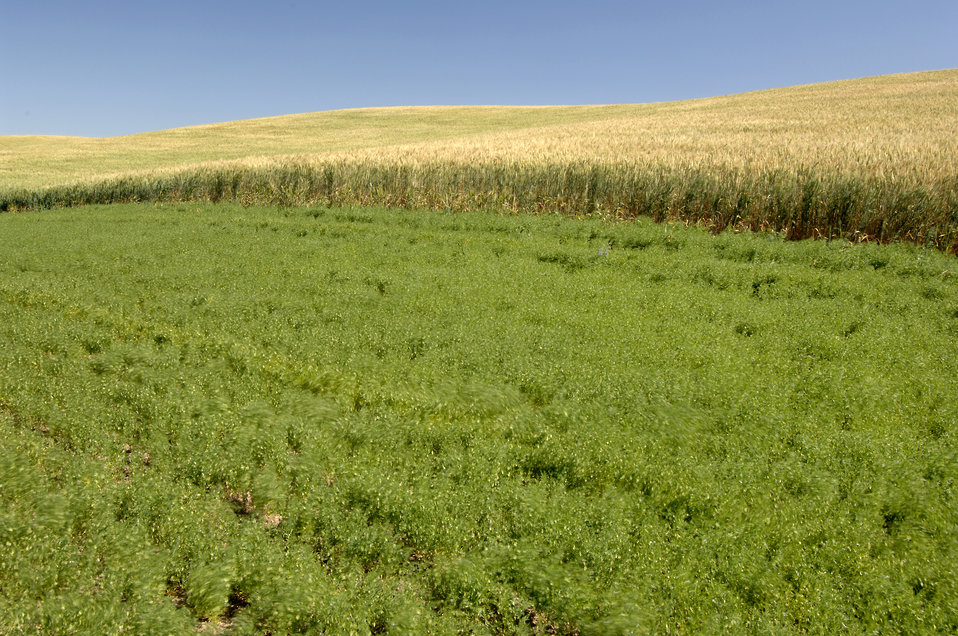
A farm located near Moscow, Idaho on July 9, 2008.